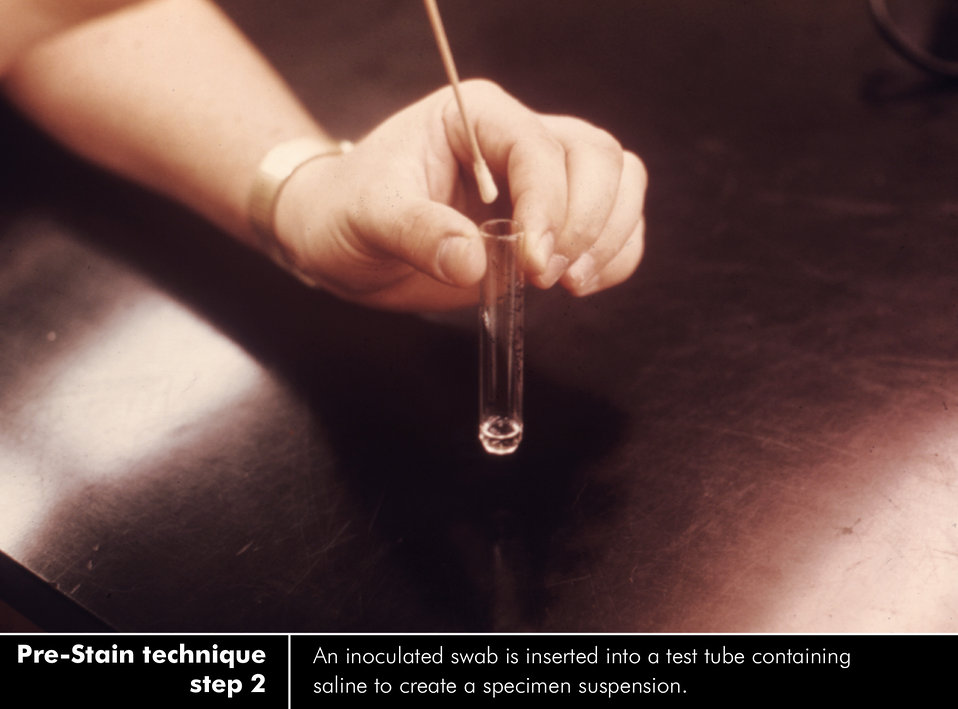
Pre-stain technique - Step 2 of 5. See PHIL ID#'s: 3431, 3572, 3432, 3565, 3428 for the complete set.